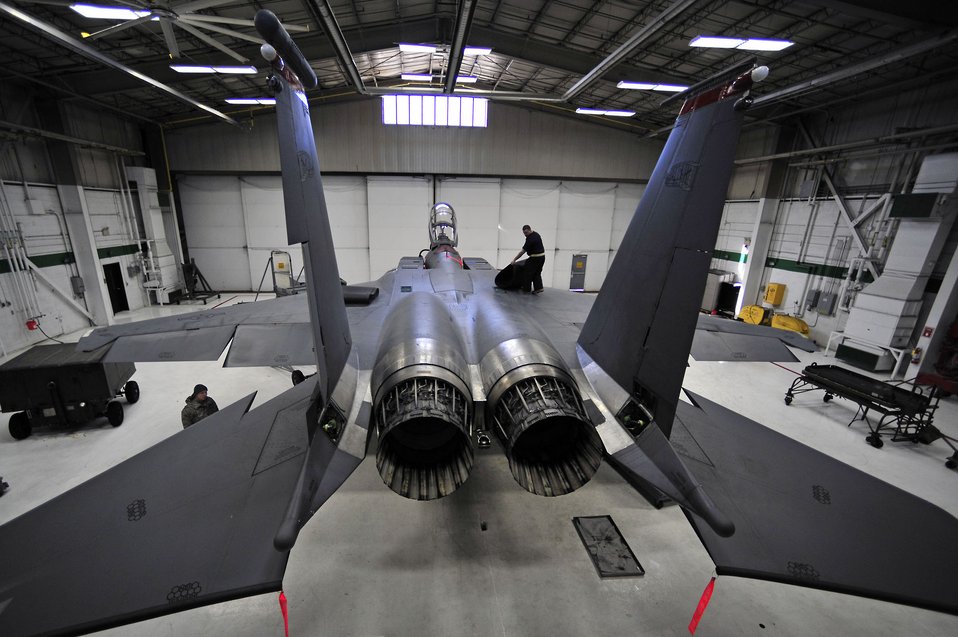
Wing-walking, modern times

Tech. Sgt. Shawn Merchant, a crew chief with the 4th Aircraft Maintenance Squadron, removes foreign object inspection mats from an F-15E Strike Eagle Dec. 15, 2010, at Seymour Johnson Air Force Base, N.C. The aircraft is assigned to the 4th Fighter Wing.